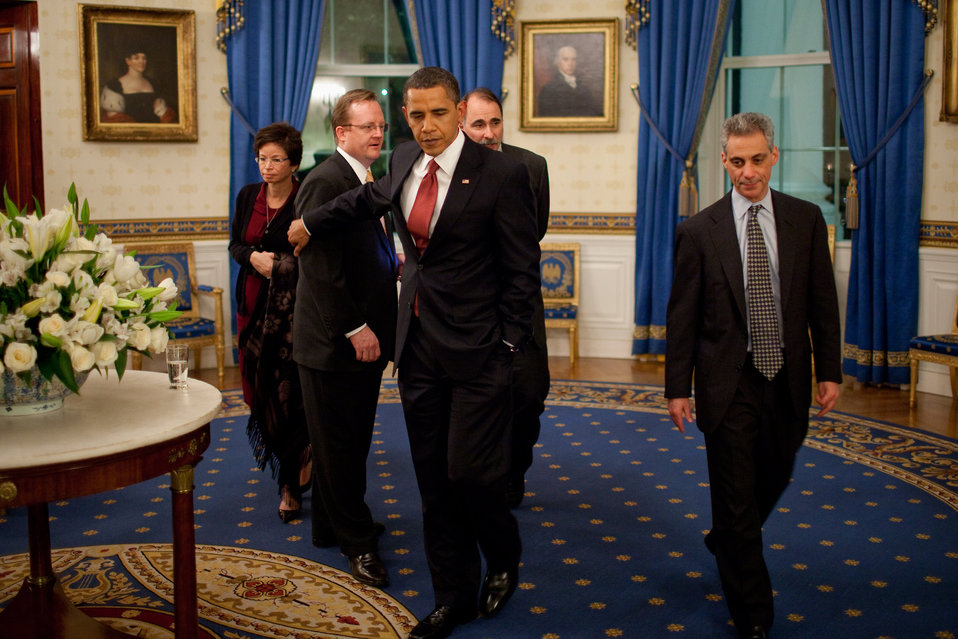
President Barack Obama and Senior staff including, Senior Advisor Valerie Jarrett, Press Secretary Robert Gibbs, Senior Advisor David Axelrod, and Chief of Staff Rahm Emanuel in the Blue Room following a live prime time press conference in East Room. 2/24/09.